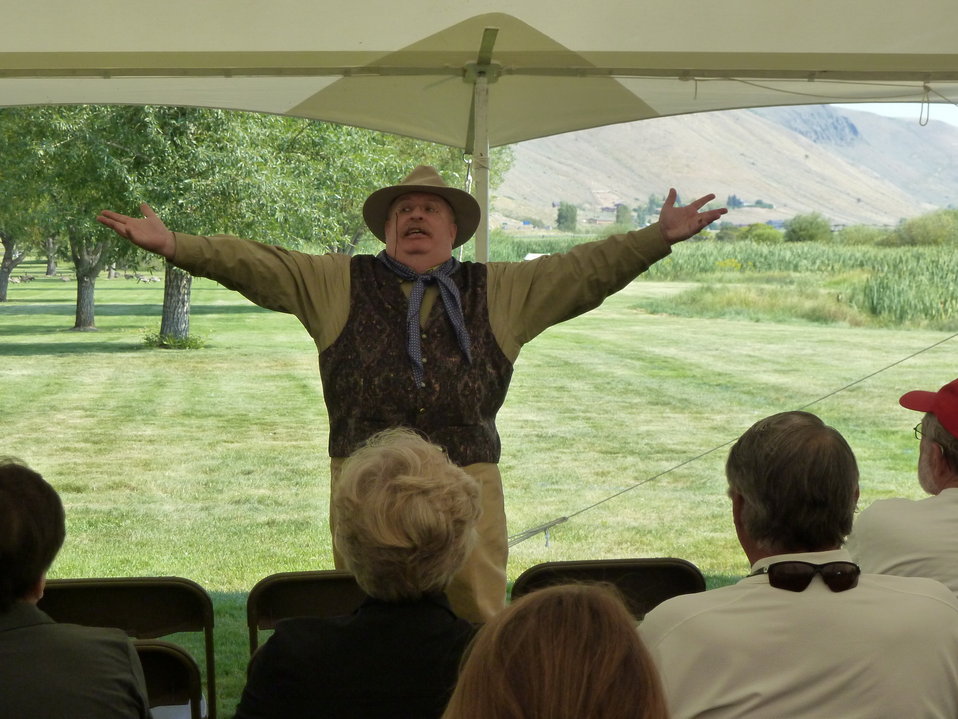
Our Energetic 26th President

Theodore Roosevelt impersonator Case Hicks gave two full performances during the National Elk Refuge's centennial weekend, as well as a short talk at the refuge's centennial ceremony on August 10.

Credit: USFWS / Betty Mulcahy, National Elk Refuge volunteer